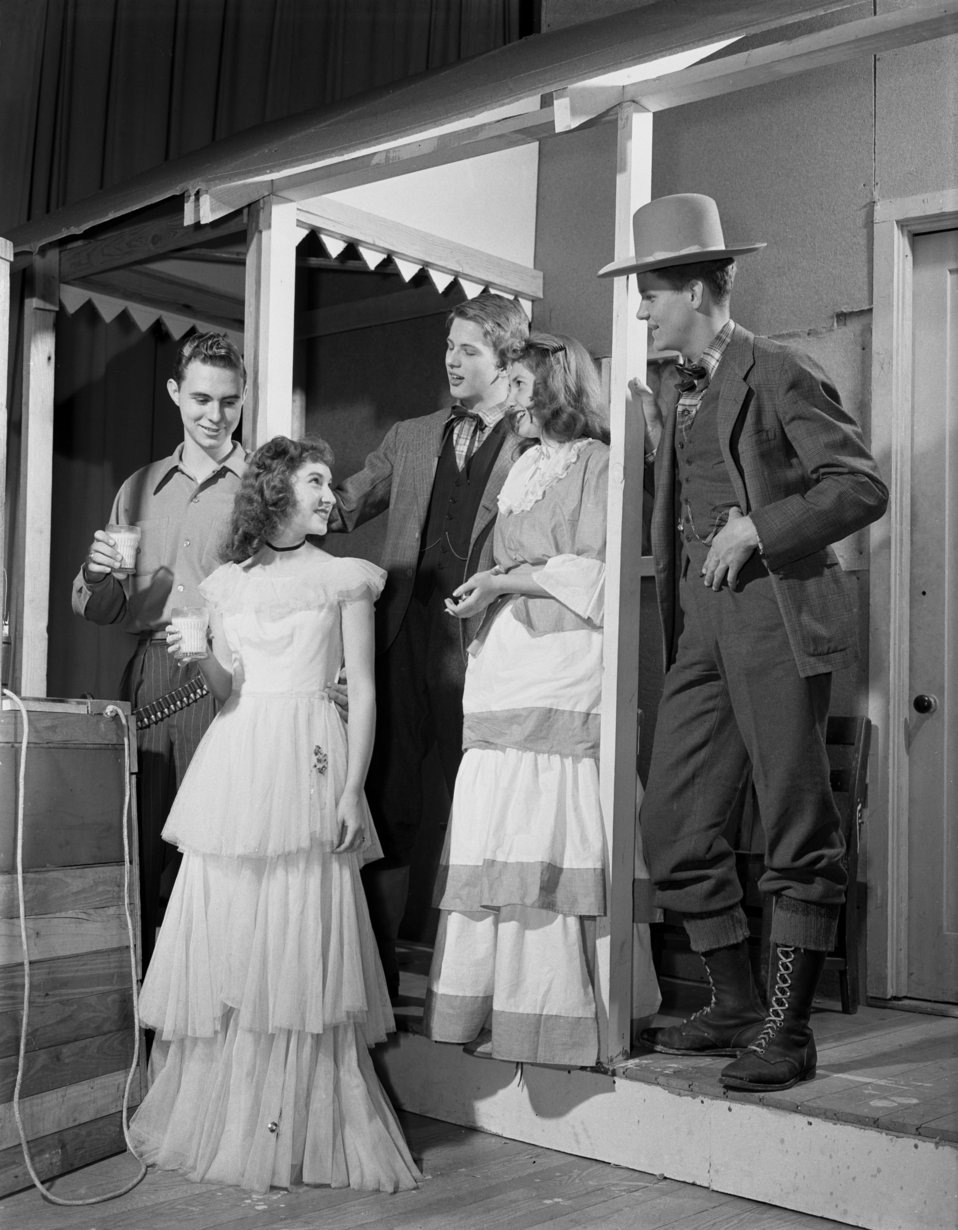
High School Play Oak Ridge 1947

3321-2b DOE photo Ed Westcott 2-28-1947 'Green Grow the Lylac' Oak Ridge Tennessee